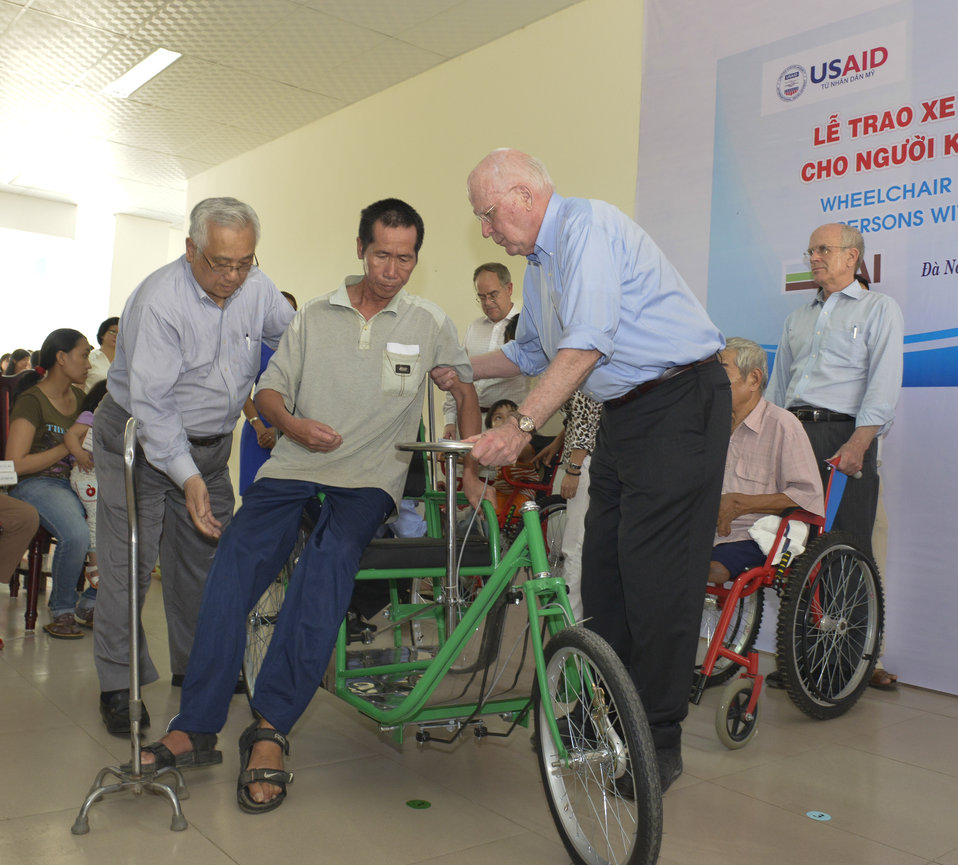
U.S. Congressional delegation attends a wheelchairs and hearing aids distribution event in Danang

Hoa Vang District Hospital, Danang, April 19, 2014.